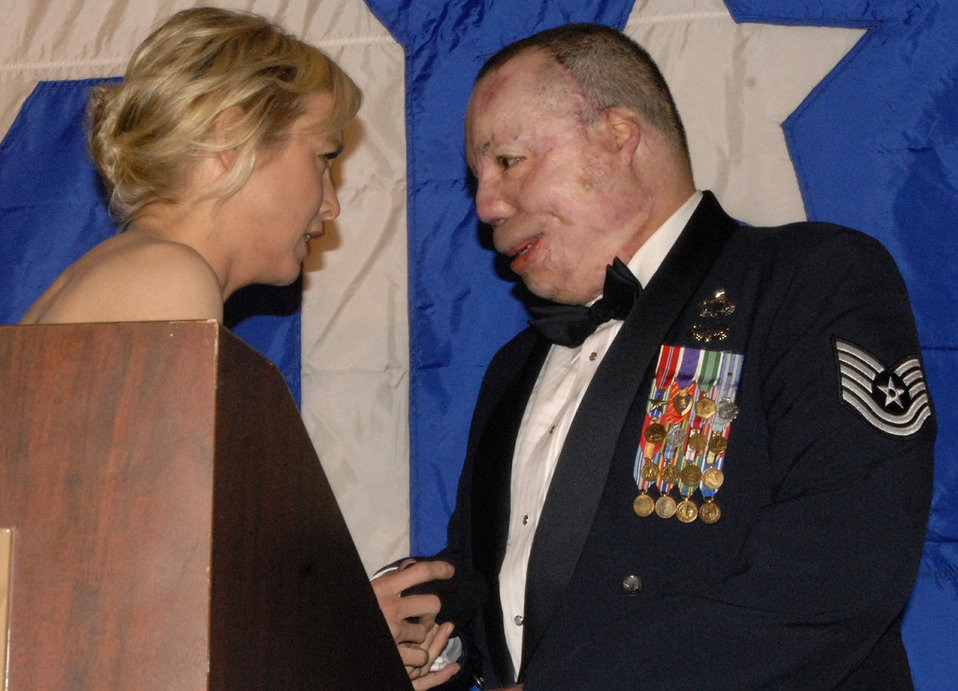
Servicemembers honored at annual USO-Metro gala

Actress and United Services Organization volunteer Renee Zellweger greets Tech. Sgt. Israel Del Toro during the USO of Metropolitan Washington Annual Awards dinner at the Ritz Carlton March 25 in Washington, D.C. The event recognized 31 of the nation's 98 living Medal of Honor recipients and other battlefield heroes from each branch of service.